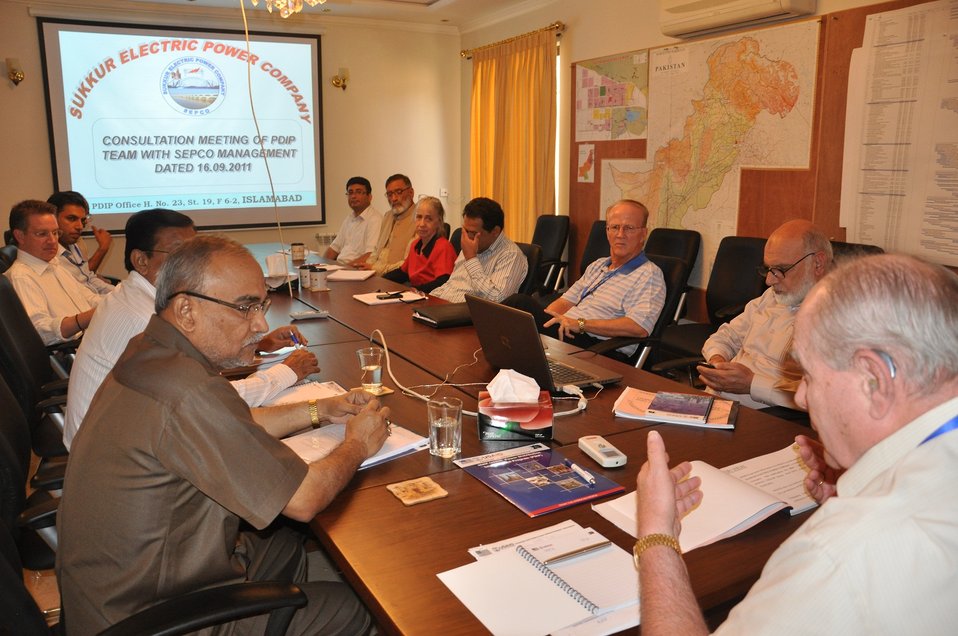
11 September, 2011 Discussion with SEPCO Management to Improve Performance

A meeting was held on September 16th with the CEO and senior management of SEPCO, the recently licensed DISCO to discuss their needs and possible areas where Power Distribution Improvement Program can cooperate with the DISCO. In response to a request made by SEPCO at the meeting, Power Distribution Improvement Program sent a team to visit the SEPCO head office in Sukkur in order to develop their official website.